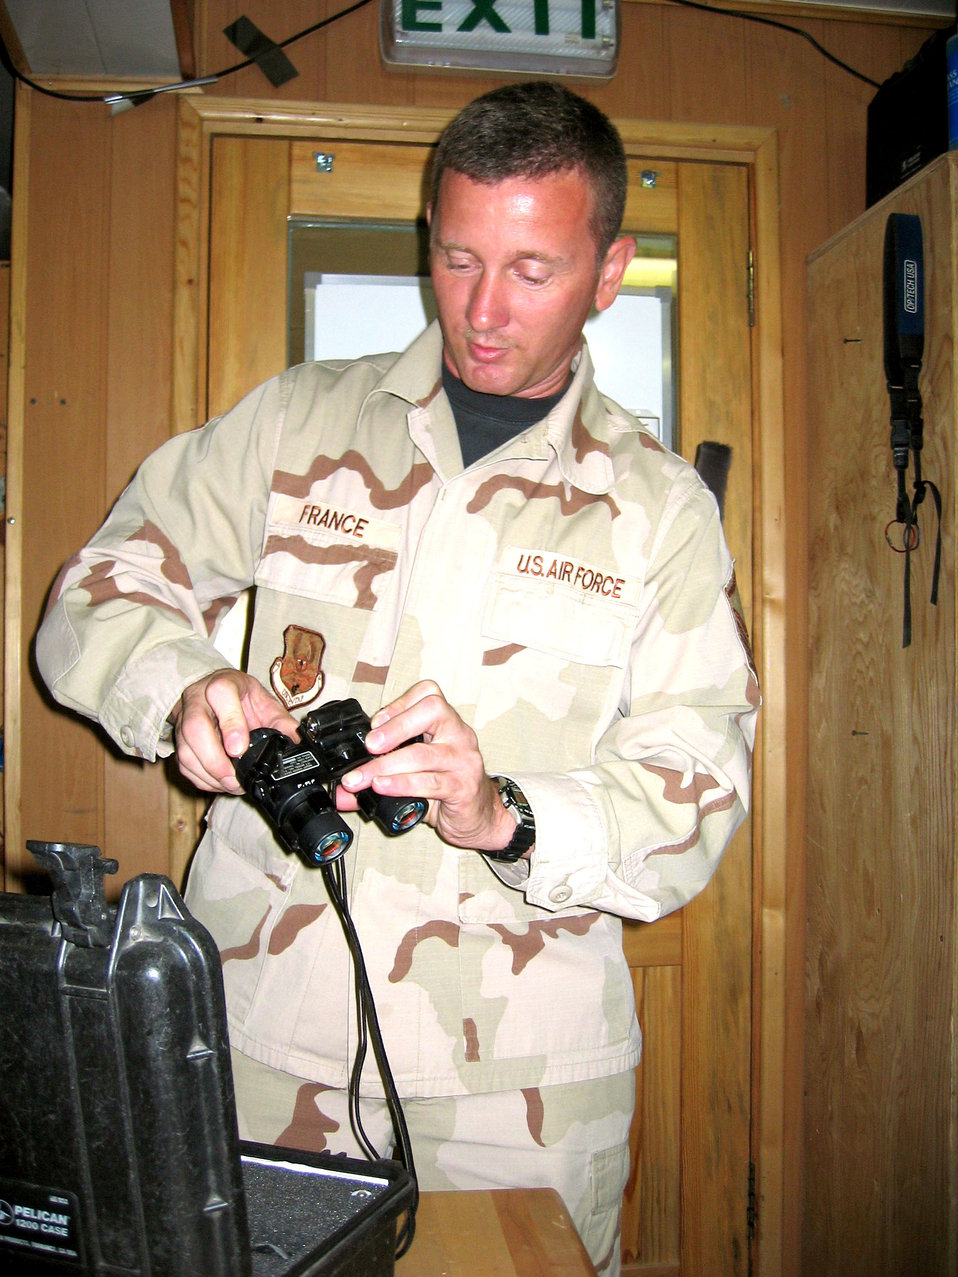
Life support technicians inspect, maintain survival equipment

KARSHI-KHANABAD AIR BASE, Uzbekistan -- Master Sgt. Ray France inspects night-vision goggles after an aircrew returns. He is an aircrew life support technician with the 774th Expeditionary Airlift Squadron and is deployed from Carswell Field, Texas.